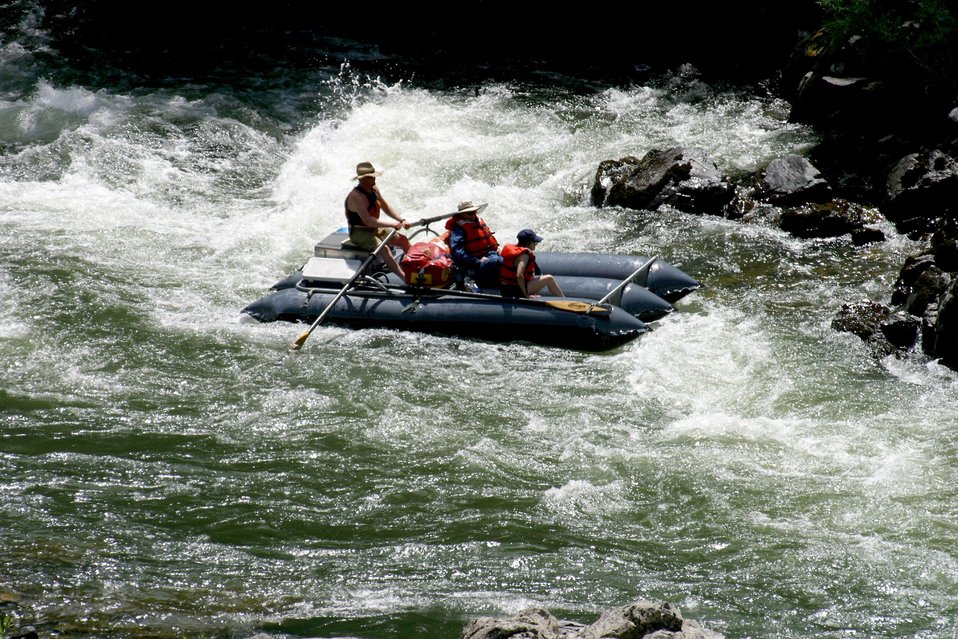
Boater at Grave Creek Falls